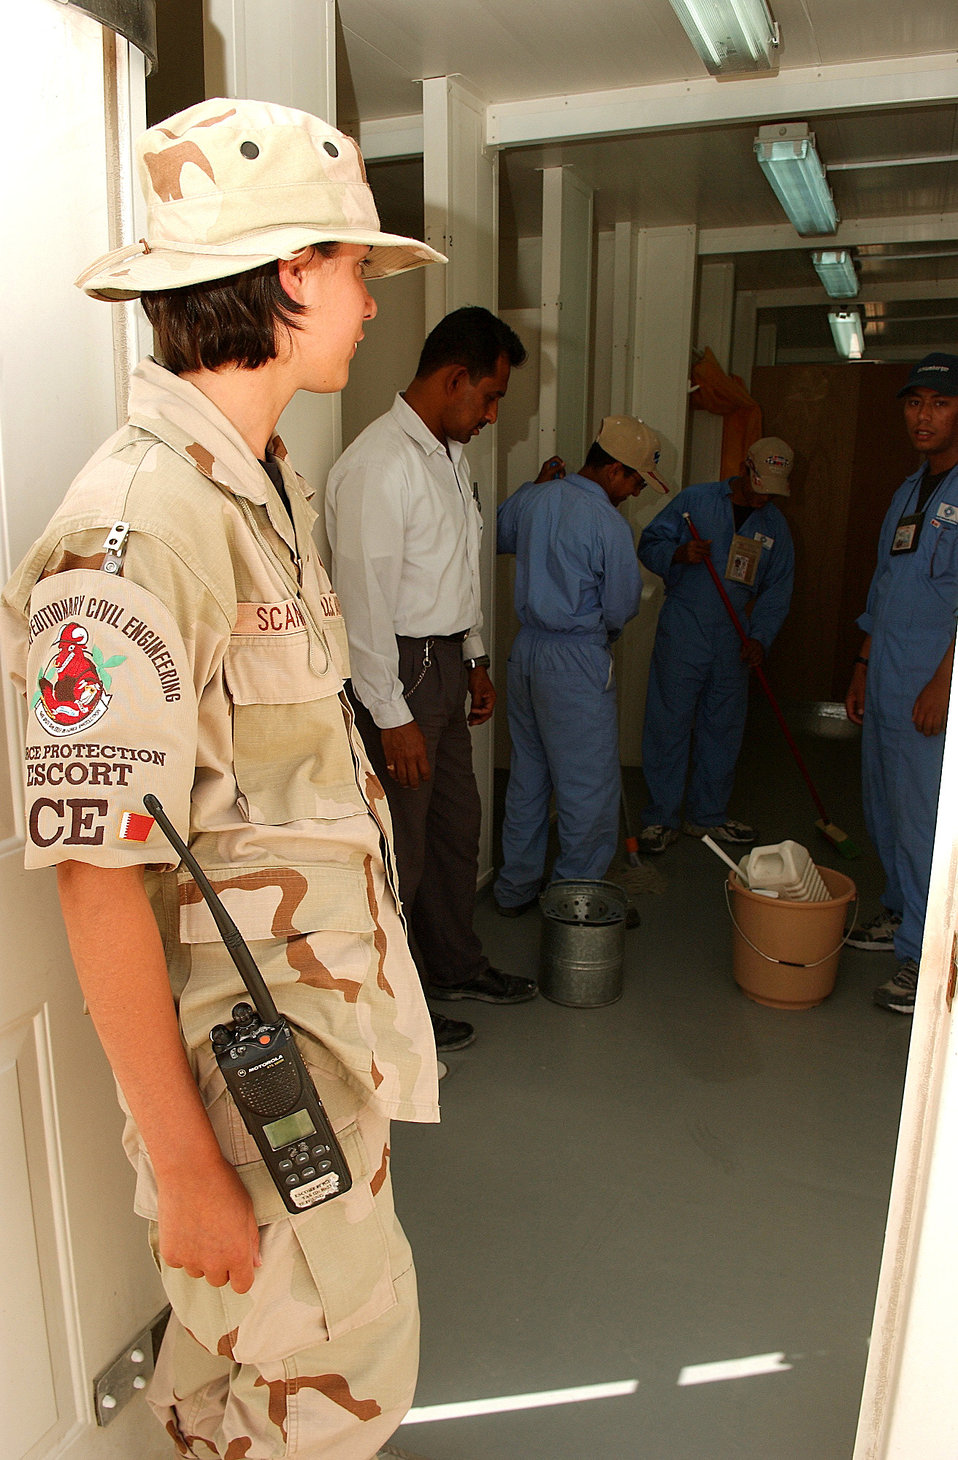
Escorts serve as base's second line of defense

SOUTHWEST ASIA -- Senior Airman Erin Scannell observes workers. She is a 379th Expeditionary Civil Engineer Squadron escort.